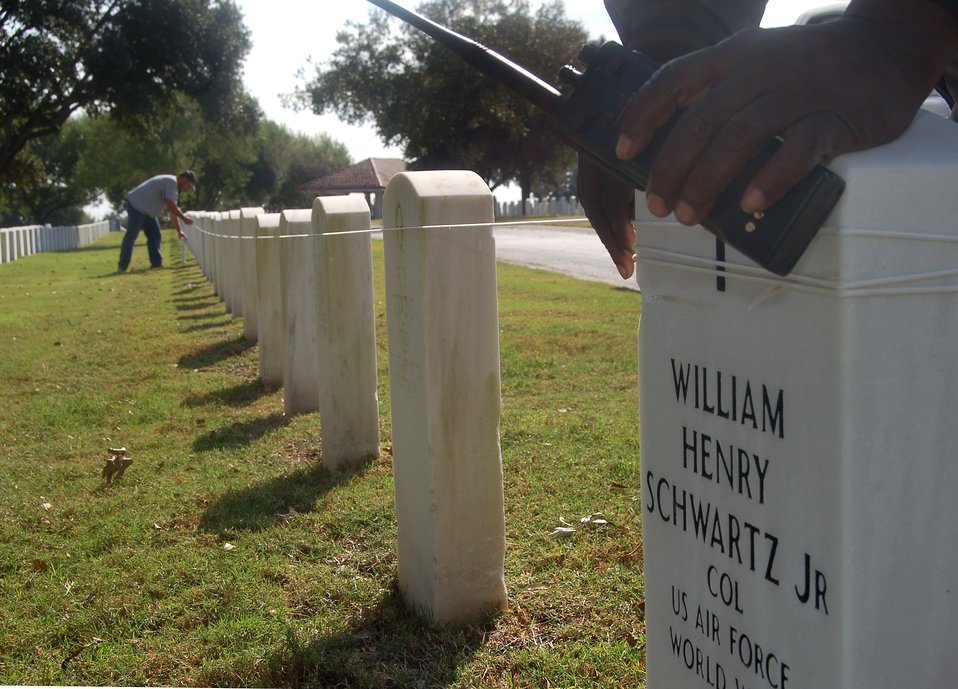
Airmen show respect to fallen servicemembers through community service

Workers at the Fort Sam Houston National Cemetery in San Antonio prepare to run a string that will assist Airmen volunteers while they align the grave markers for Veterans Day. The process, referred to as bumping and running, aligns all the headstones so the markers stay in proper rows and columns.